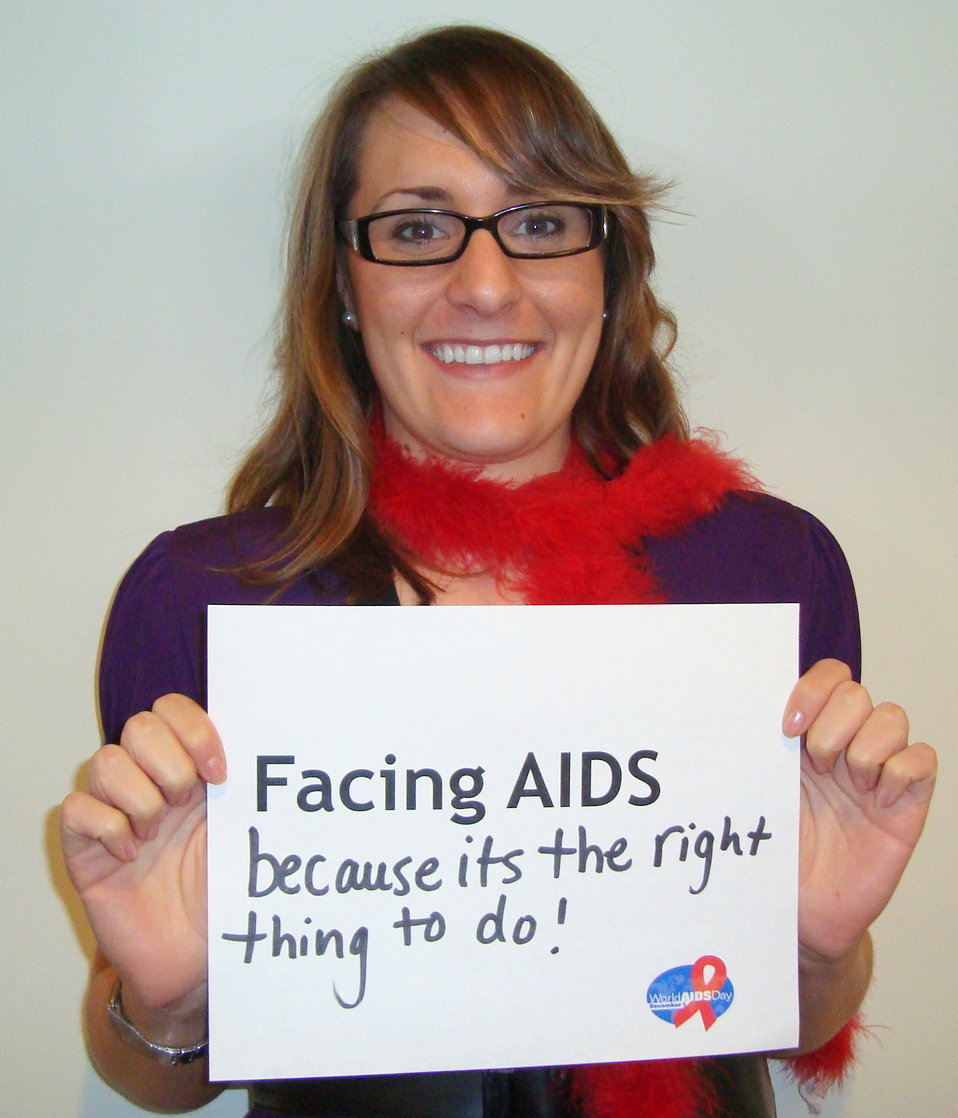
FacingAIDSCampaign 061

'Facing AIDS because it's the right thing to do!'